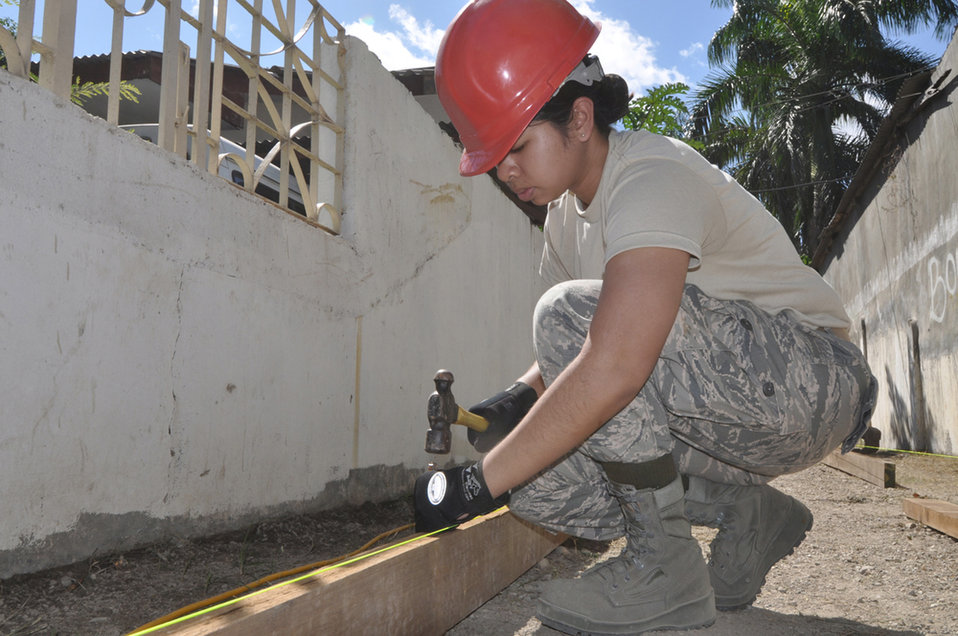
Guam Guard members leave mark in Dili

Staff Sgt. Kesha Rosario drives a stake in the ground to fortify a wooden beam that will be used in the foundation of a new sidewalk outside the national hospital July 16 in Dili, Timor Leste. Sergeant Rosario is a knowledge operations management journeyman with the Guam Air National Guard's 254th RED HORSE Squadron at Andersen Air Force Base, Guam. The squadron was in Timor Leste as part of Pacific Angel 2009, a Pacific Air Forces humanitarian assistance operation.